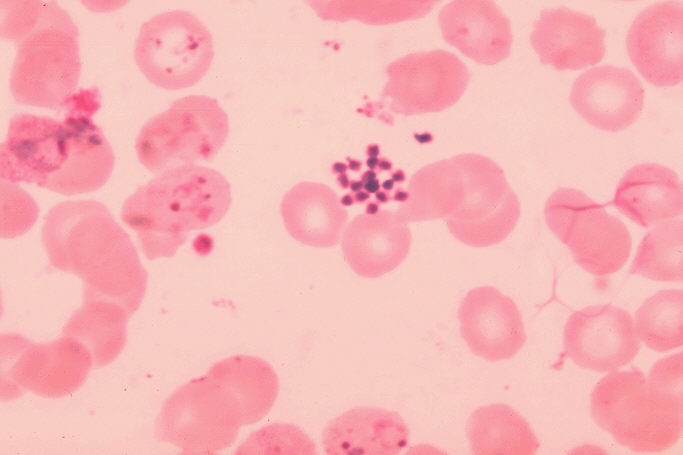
This photomicrograph depicts a mature Plasmodium vivaxschizont found in this in blood smear. Note the cluster of 15 merozoites.